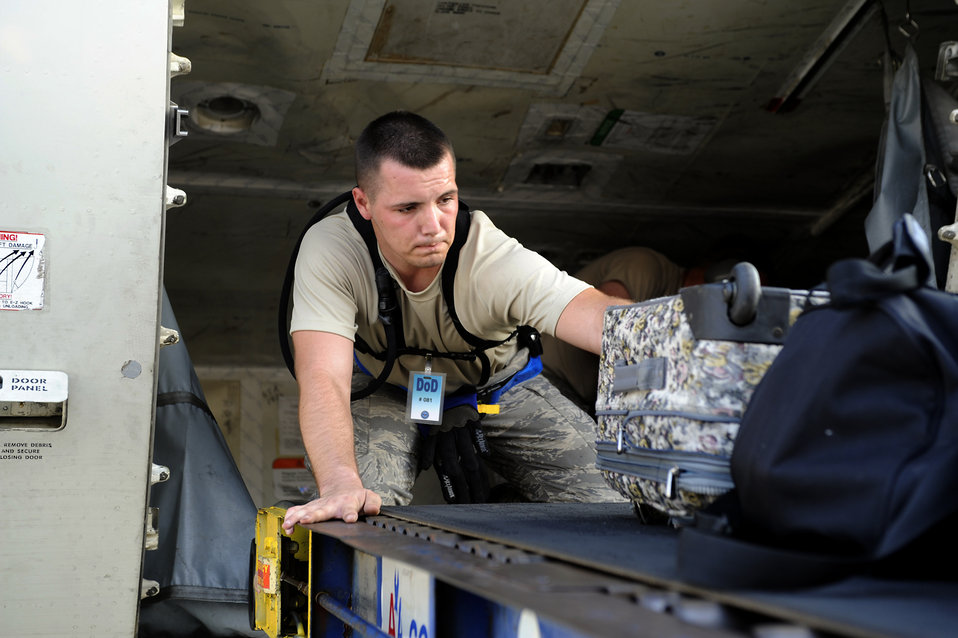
Airmen there as hurricane evacuation begins

An Airman from the 615th Contingency Response Wing at Travis Air Force Base, Calif., loads luggage at the Louis Armstrong International Airport in New Orleans Aug. 30. Officials with the Federal Emergency Management Agency and the Department of Defense have chartered flights to transport evacuees of Hurricane Gustav to destinations safely outside the path of the hurricane.